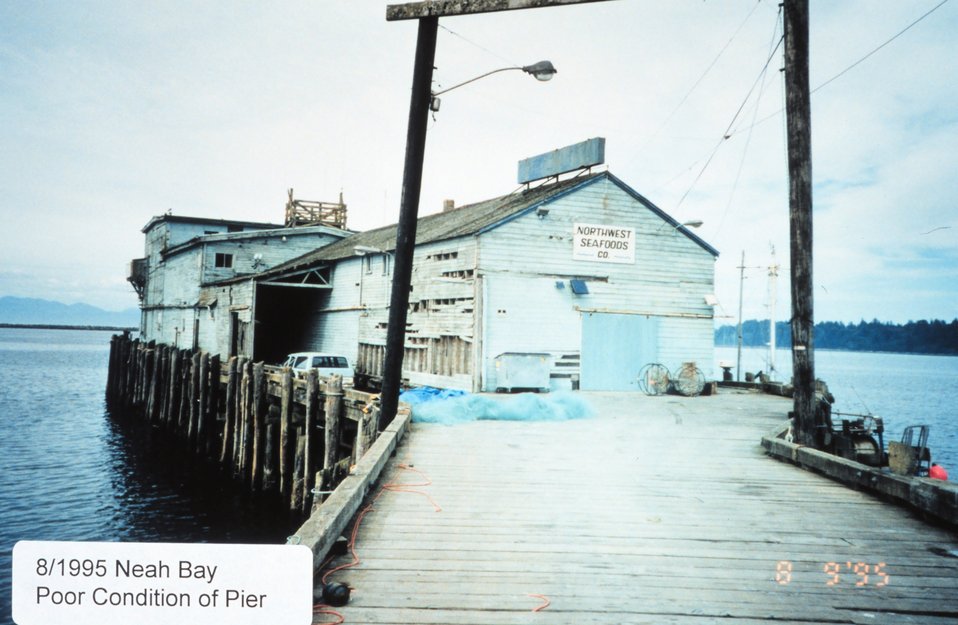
Rustic appearing Northwest Seafoods Company Pier.